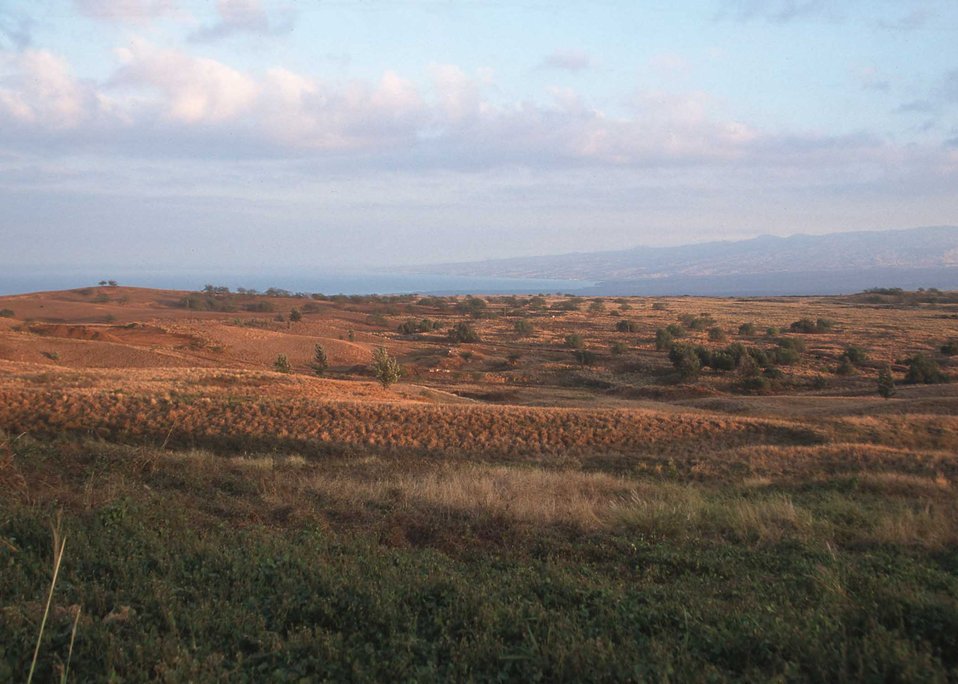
Rangeland in Hawaii beginning to show the effects of drought.